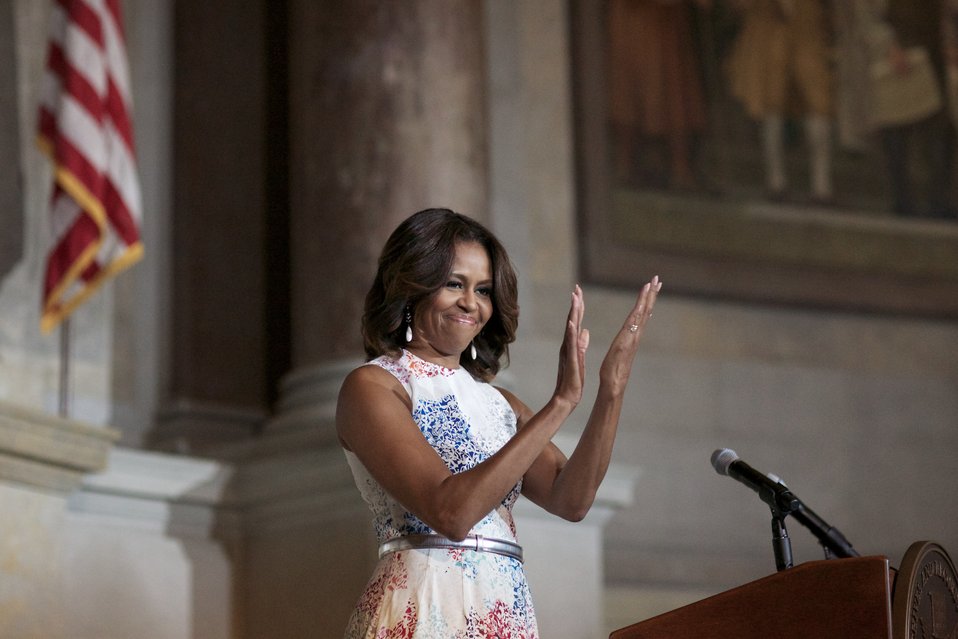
Naturalization Ceremony with Michelle Obama